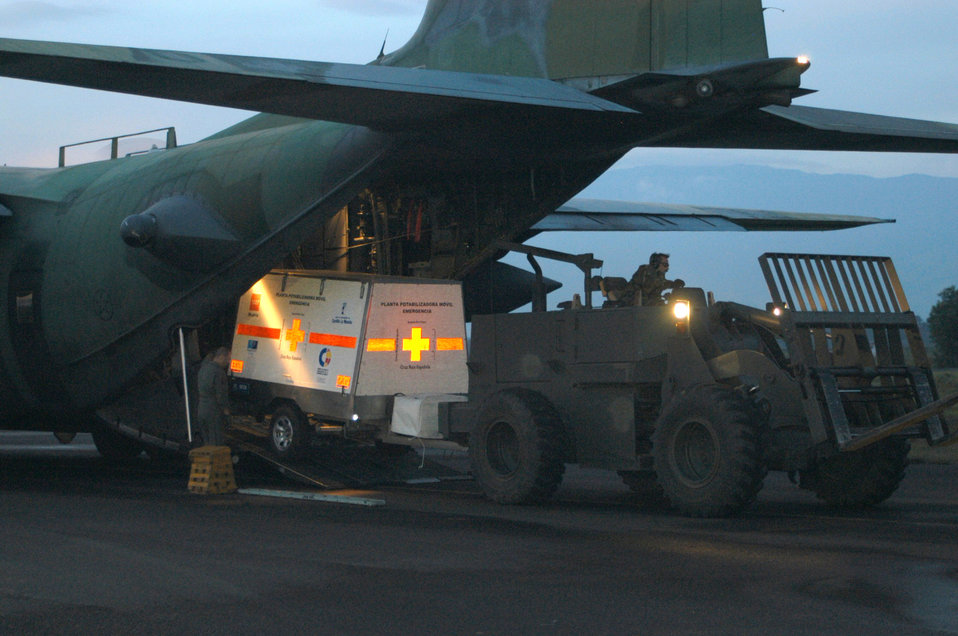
Airmen put relief on target

BANDA ACEH, Indonesia -- A Spanish Red Cross water purification trailer is taken off an MC-130H Combat Talon II here by aerial delivery support branch specialists. Airmen of the 353rd Special Operations Group and Theater Special Operations Air Component help move tons of cargo daily at the tiny airfield.